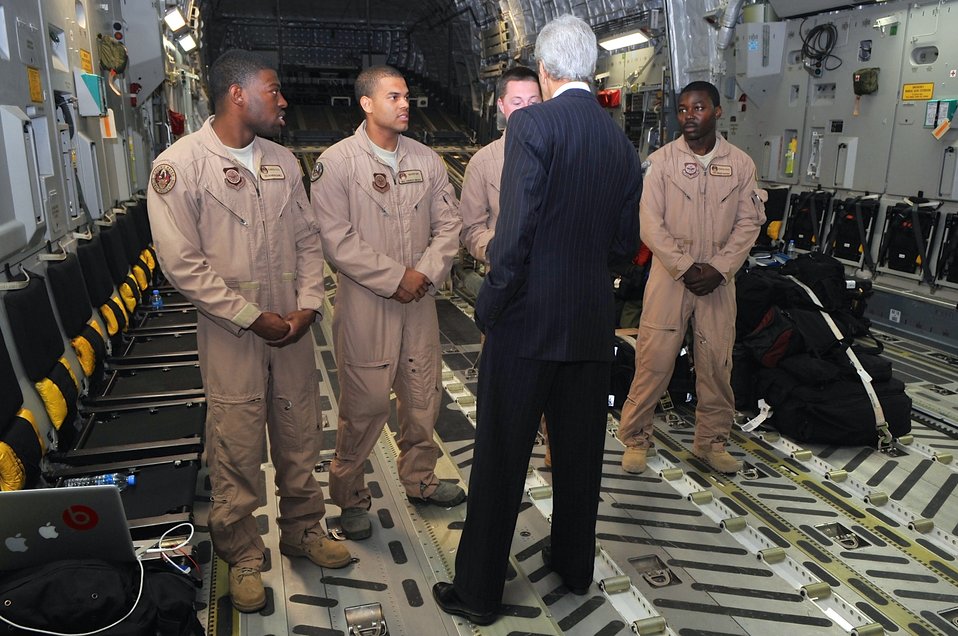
Secretary Kerry Chats With Crew Aboard C-17 Flying Him to South Sudan

U.S. Secretary of State John Kerry chats with part of the crew of an Air Force C-17 plane that flew him from Addis Ababa, Ethiopia, to Juba, South Sudan, on May 2, 2014.